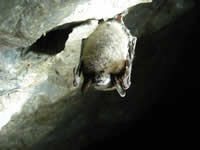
Little brown bat with white-nose syndrome in Greeley Mine, Vermont, March 26, 2009.

Credit: Marvin Moriarty/USFWS

Image size: 2816p (39 in.) W x 2112p (29 in.) H, 72 ppi, 4.2 MB